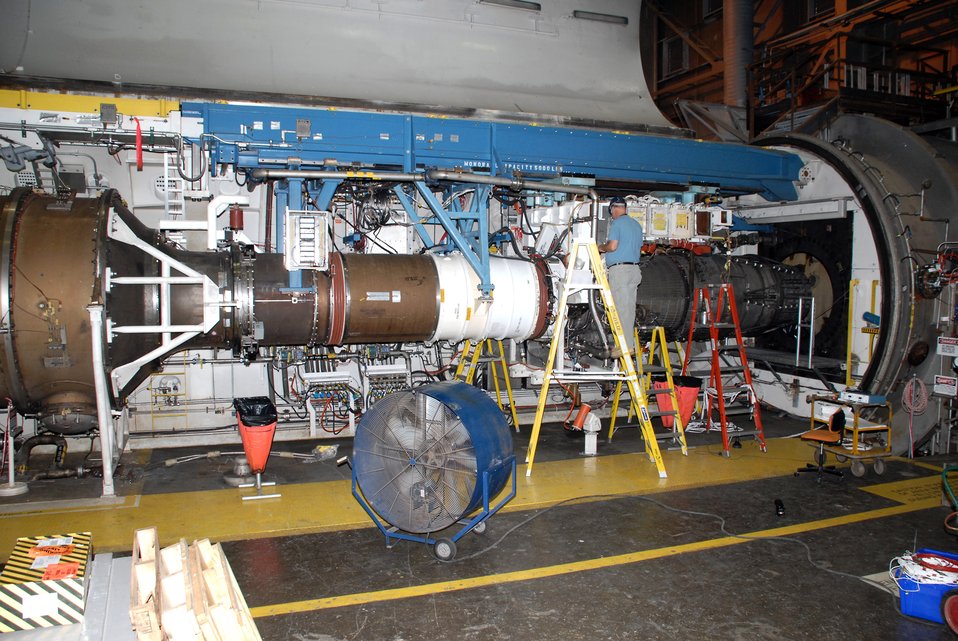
Secretary sees first afterburning engine test with synthetic fuel

A test technician prepares the General Electric F101 engine for testing at Arnold Engineering Development Center at Arnold Air Force Base, Tenn. The F101 engine is slated to be the first high-performance, supersonic engine to be certified to run on a 50-50 blend of Fisher-Tropsch synthetic fuel and JP-8 fuel.